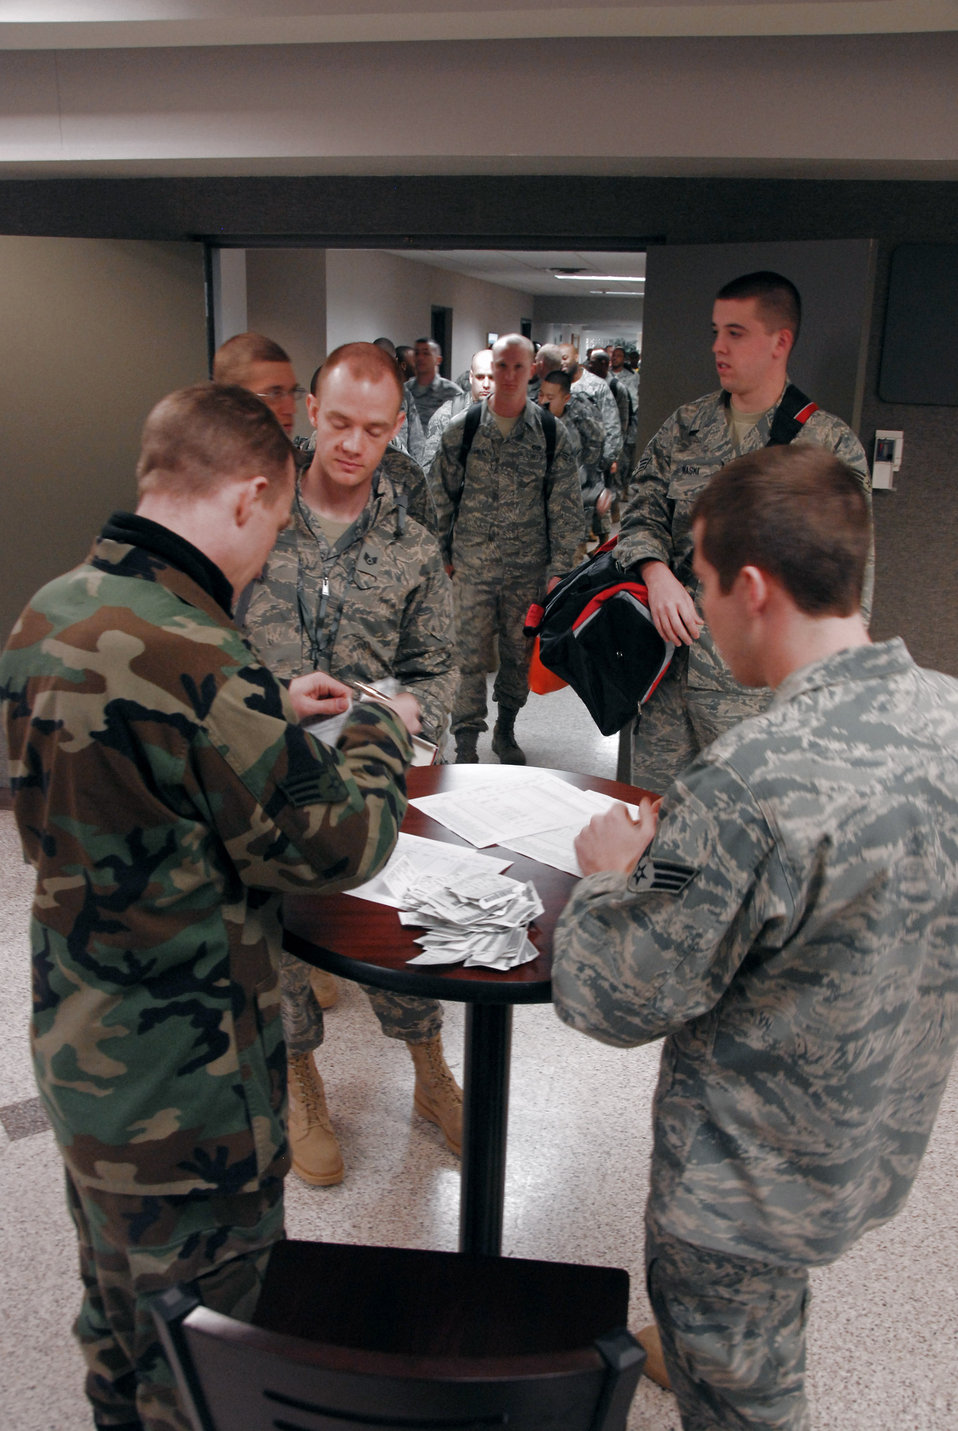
CAFB: Gateway to AOR

Senior Airmen Joshua Bounds, left, and Clinton Packwood, right, check in Airmen Feb. 7 in the 437th Aerial Port Squadron passenger terminal for a contracted aircraft that will take them to Southwest Asia in support of Operations Enduring and Iraqi Freedom from Charleston Air Force Base, S.C.. More than 800 Airmen from various installations throughout the Air Force have been coming to Charleston AFB since Dec. 22, 2008 to be deployed. The base is one of five aerial ports of embarkation that makes it more convenient for Airmen to deploy to the area of responsibility. Airmen Bounds and Packwood are passenger service representatives with the 437th APS.